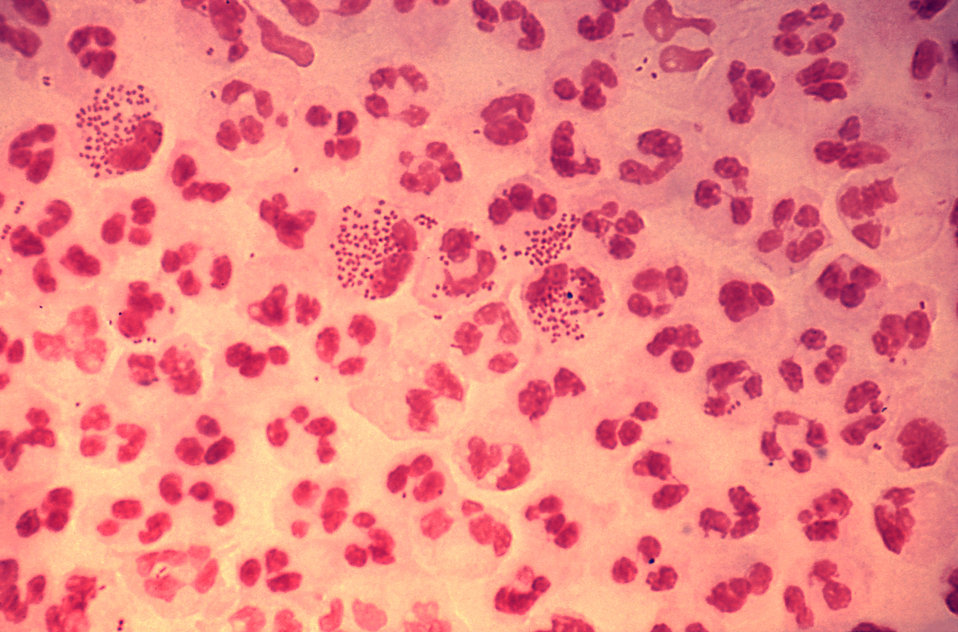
This photomicrograph reveals the histopathology in an acute case of gonococcal urethritis using Gram-stain technique.